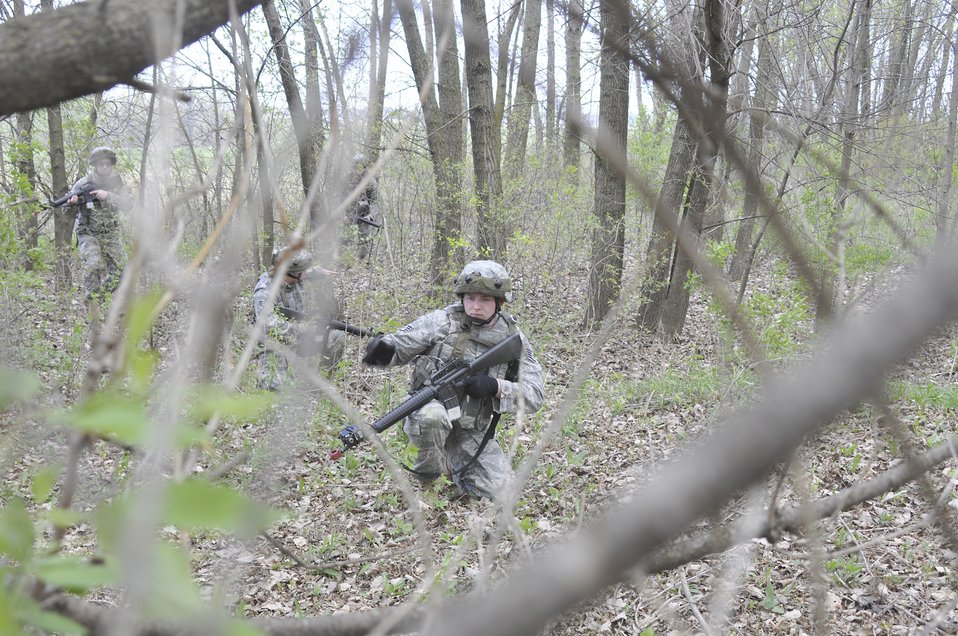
Look over there?

Staff Sgt. Cody Beran leads a combat patrol during an annual training exercise May 1, 2010, at Gen. Mitchell International Airport in Milwaukee, Wis. The training reinforced land navigation and reactive fire techniques for security forces. Sergeant Beran is a security forces team member with the Wisconsin Air National Guard's 128th Air Refueling Wing.